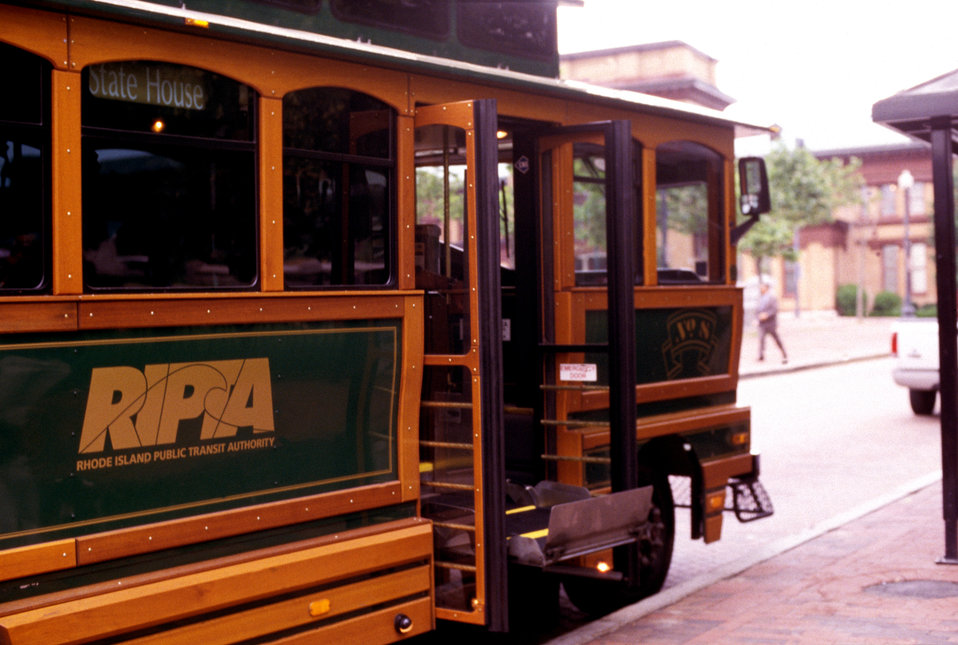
The wheelchair-seated man in PHIL# 9080, had already boarded this antique-style, faux trolley city bus, by using a lift mechanism built into the central portion of the vehicle. Because a special mechanical lift was required, the means of access was not universal. However, the inclusion of this device meant that many more people could take advantage of the public transit offered by this city, which justified the consideration that was paid during the design process governing the manufacturing of such publicly-accessible mass transit vehicles.